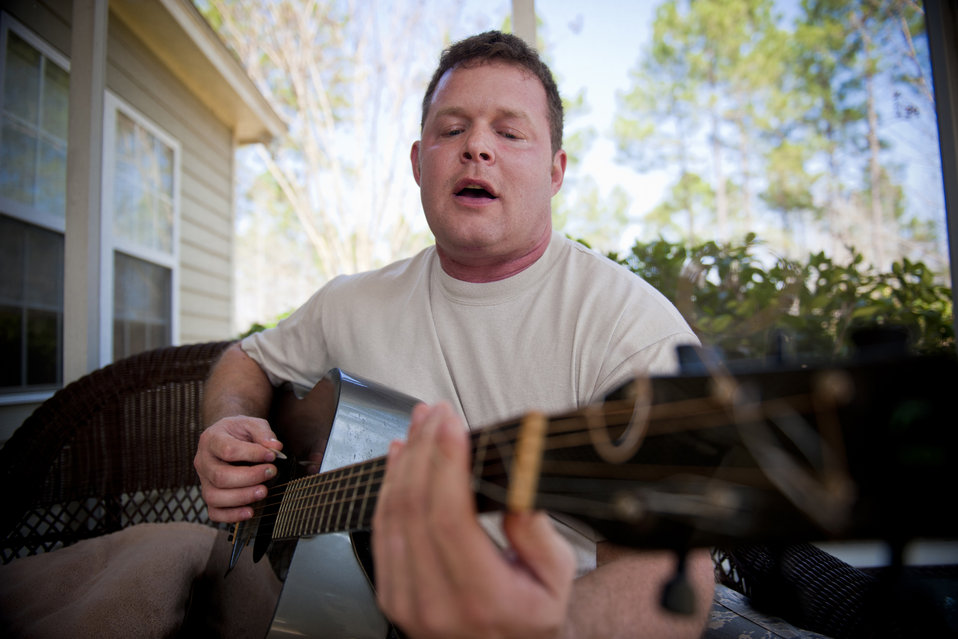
Master Sgt. Robert Disney performs a rendition of Seether's